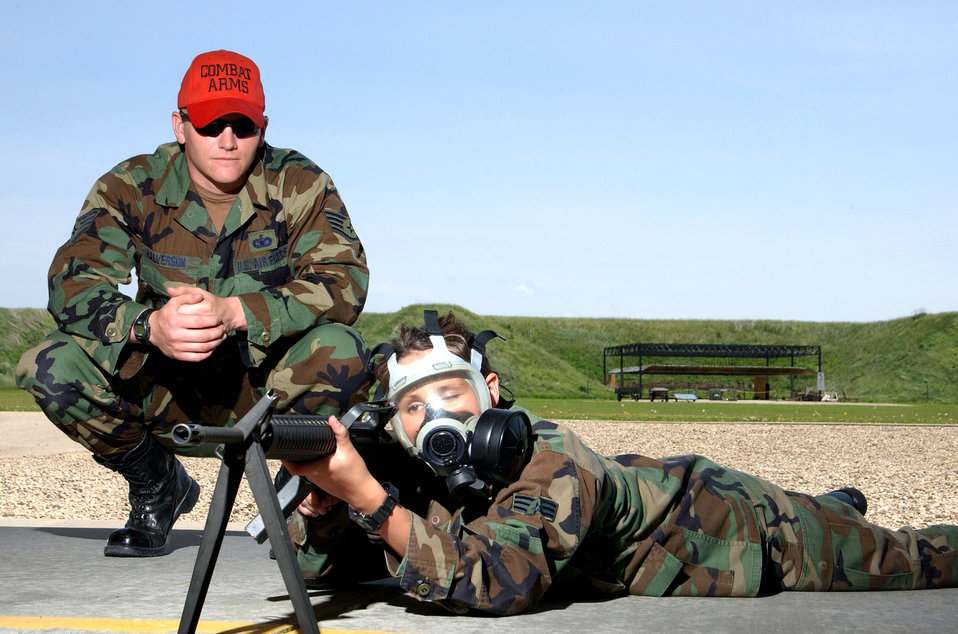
Taking aim

TRUAX FIELD, Wis. -- Staff Sgt. Benjamin Halverson instructs Senior Airman Sarah Ellis on proper use of an M-16 rifle while wearing a chemical protective mask during live-fire qualification training here June 5. The 115th Fighter Wing recently incorporated wear of the protective mask into the rifle qualification standards. Sergeant Halverson is a security forces Airmen assigned to 115th Security Forces Squadron's combat arms training and maintenance unit, and Airman Ellis is a videograher assigned to the 115th FW.